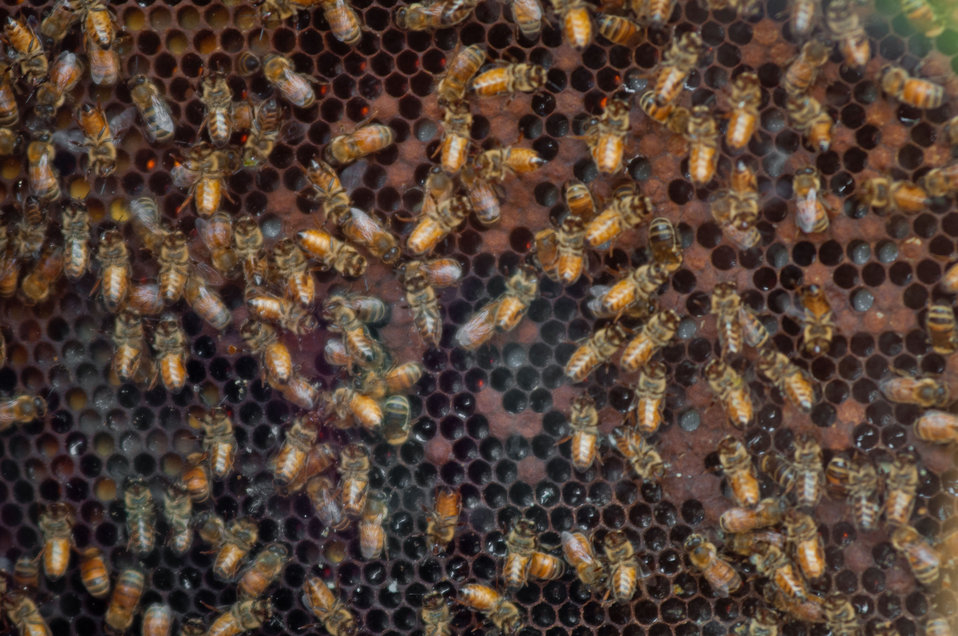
The U.S. Department of Agriculture (USDA) Bee Research Laboratory displays a live bee colony in a two-sided glass case at 2012 Smithsonian Folklife Festival, Thursday, June 28, 2012 on the National mall in Washington, D.C. One of the three themes this year is “Campus and Community.” It celebrates the 150 years of the USDA and the Land-Grant University System. The USDA and the Land-Grant system extend education across the country, contributing to American agriculture success and rural prosperity. “Campus and Community” has demonstrations, discussions, hands-on activities, and entertainment to that showcase the many ways that this partnership works to improve American agriculture and rural life.